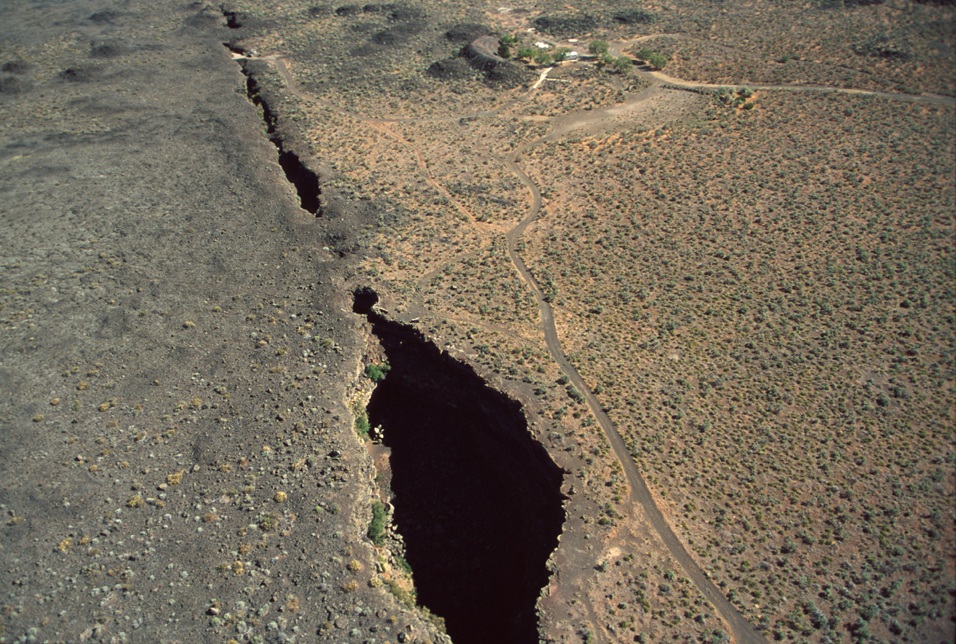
Shoshone Field Office USRD Upper Snake River District